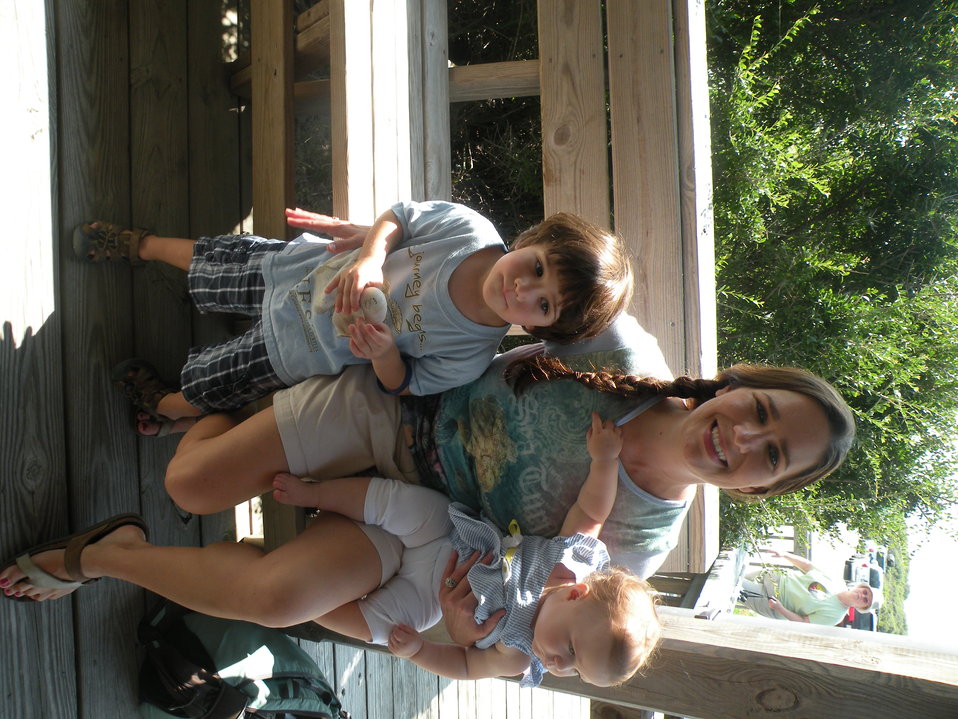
Get Your Goose On!

Outer Banks Mommy and Me group enjoy learning about turtles and Get there Goose on!

Cindy Heffley/USFWS